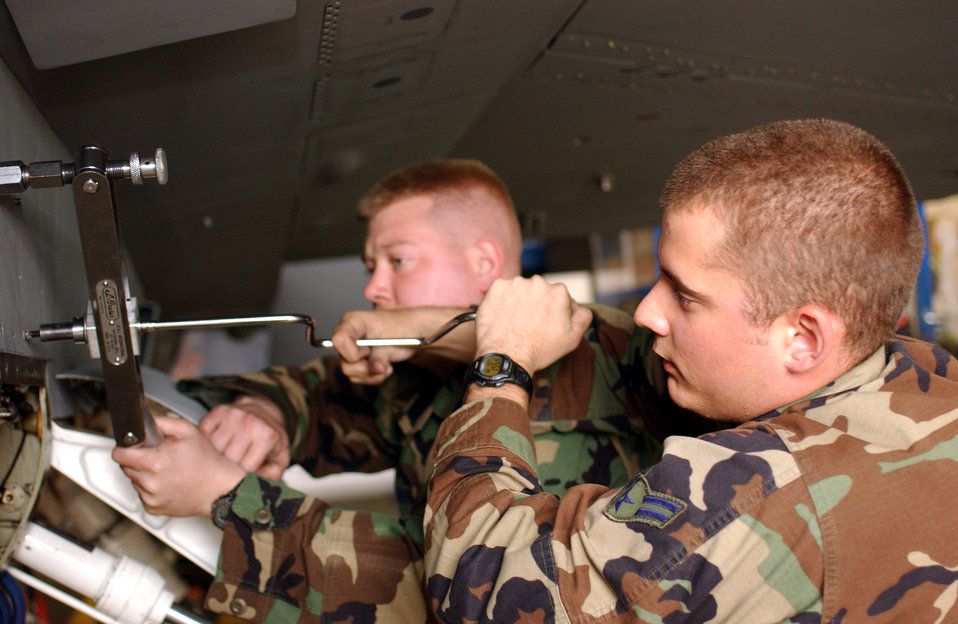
Falcon upgrades

SPANGDAHLEM AIR BASE, Germany -- Airman 1st Class Ricky Cline (foreground) and Staff Sgt. Hunter McCubbins (background) break screws from the panels of an F-16 Fighting Falcon that was part of the common configuration implementation program here April 21. The six-month, $232,000,000 upgrade was used to enhance the avionics and electronics of the aircraft here. Airman Cline and Sergeant McCubbins are crew chiefs with the 52nd Aircraft Maintenance Squadron.